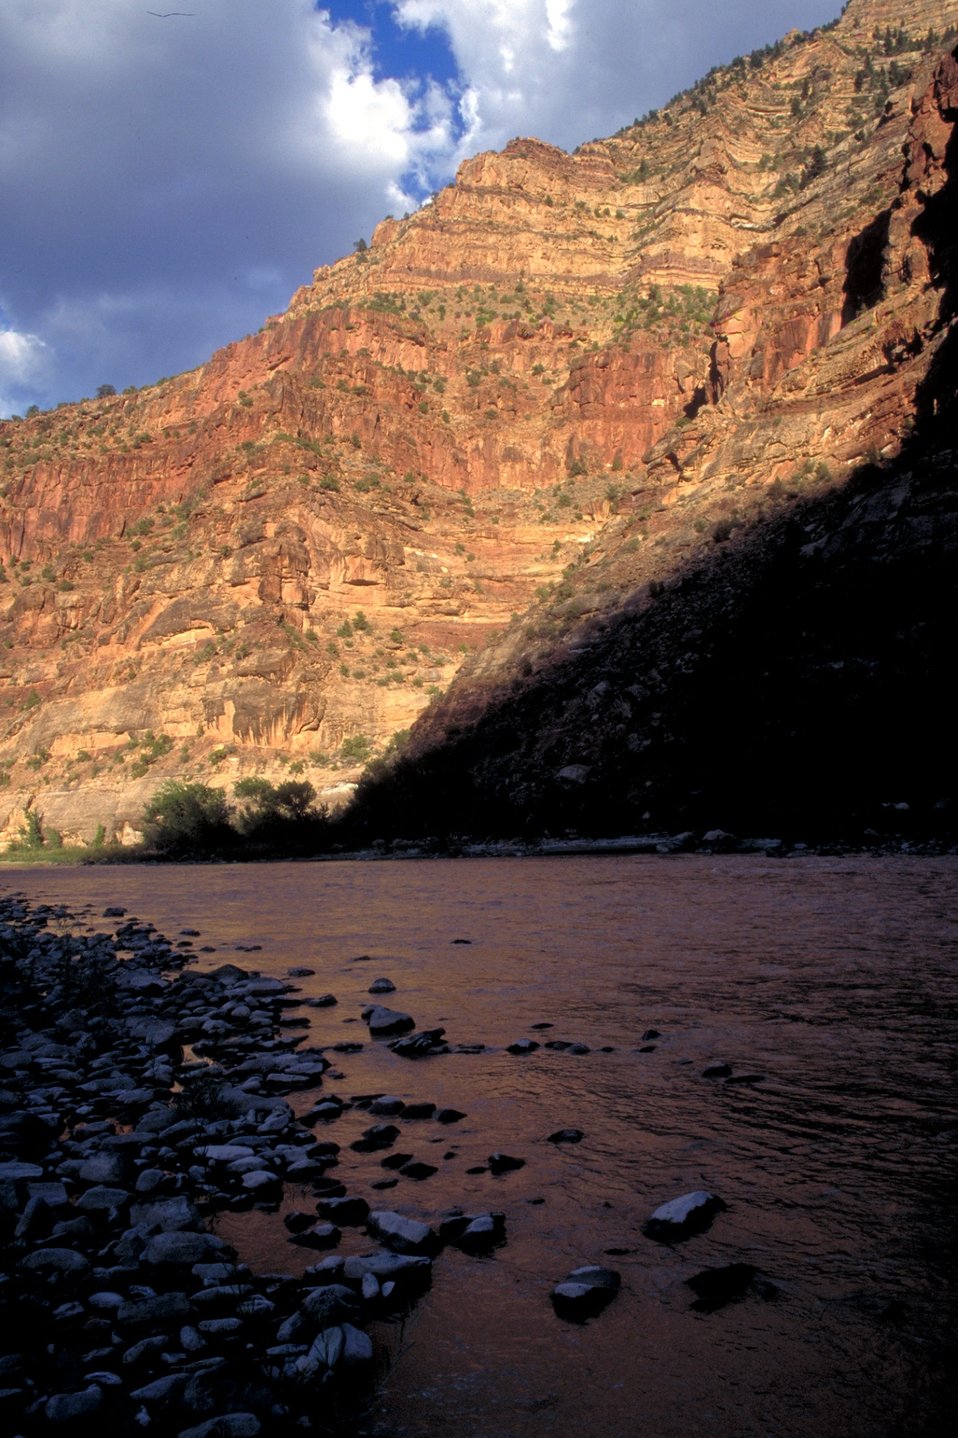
Desolation/Gray Canyons near Price, Utah.